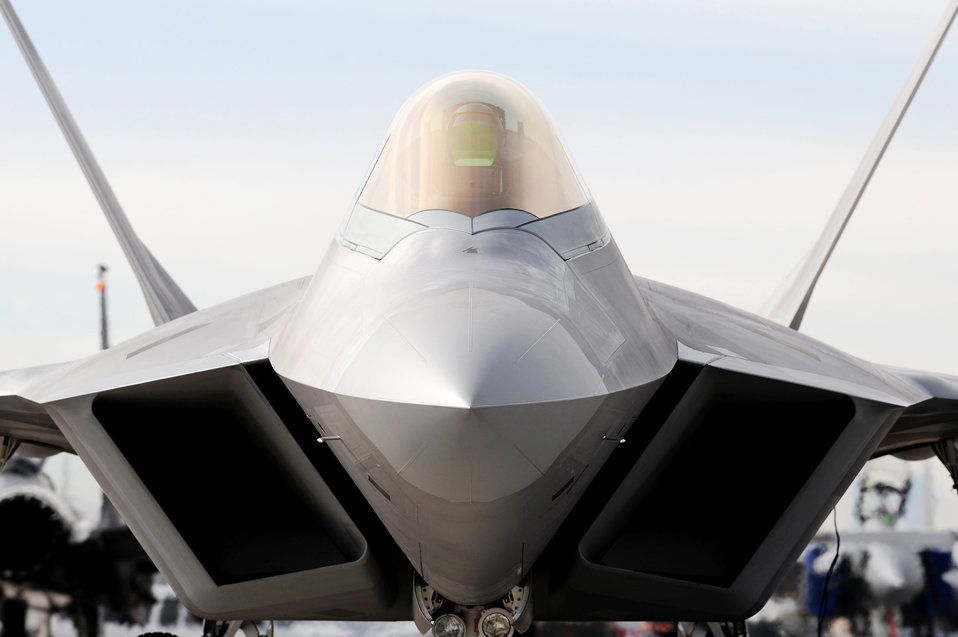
Raptors reign at Red Flag

An F-22 Raptor prepares to leave the flightline at Nellis Air Force Base, Nev., for a Red Flag training mission Feb. 4, 2010. Red Flag is a realistic combat training exercise involving the air forces of the United States and its allies. The Raptor is assigned to the 49th Fighter Squadron at Holloman AFB, N.M.